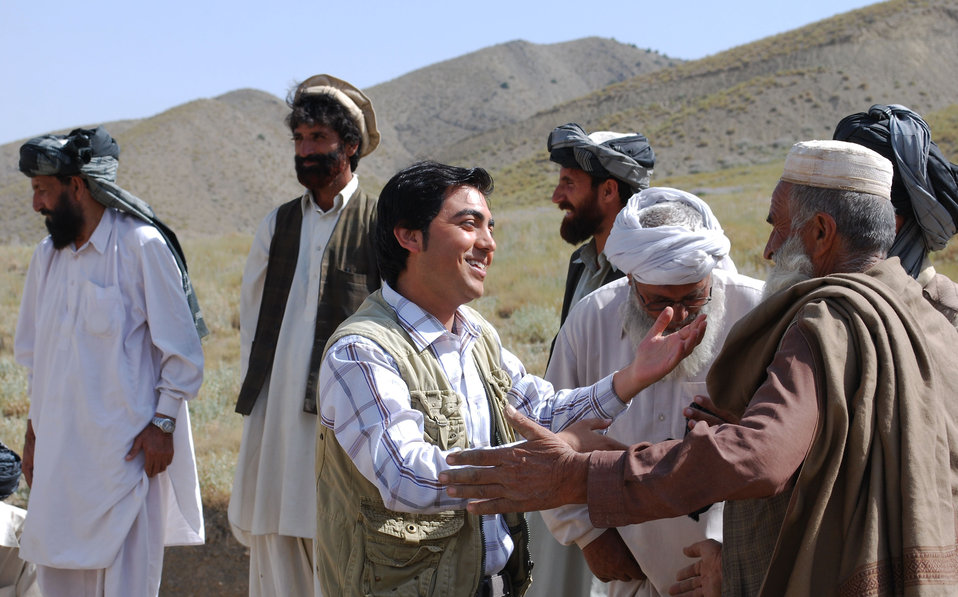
'On the Road' in Paktya Province